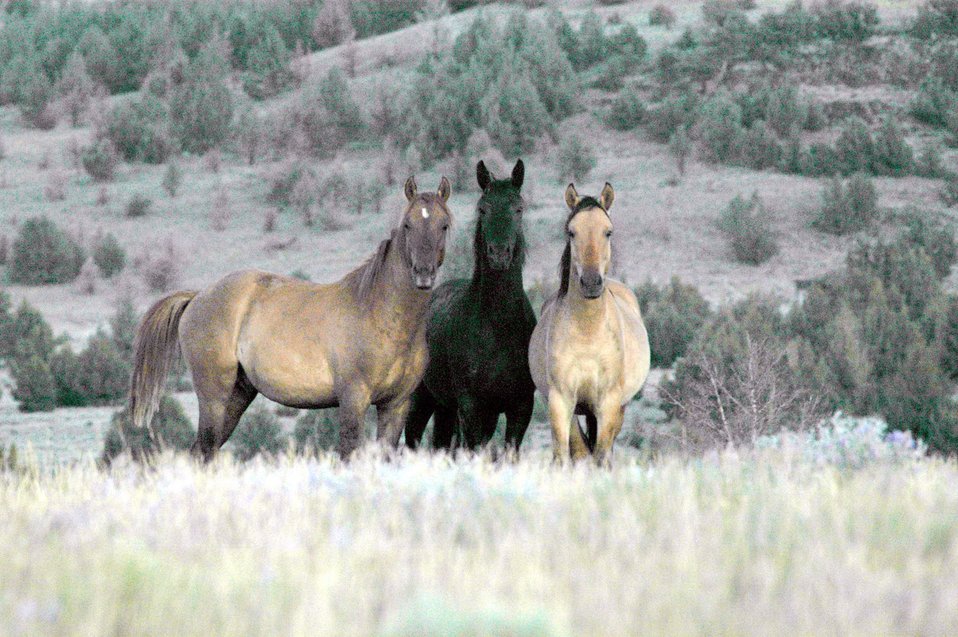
Kiger horses roam the plateaus of the Kiger Wildhorse Herd Management Area near Steens Mountain in Southeastern Oregon.